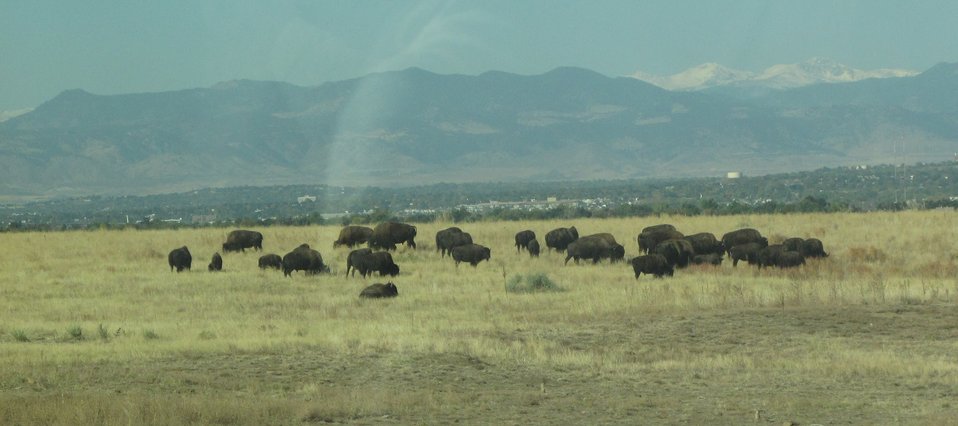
Bison herd at the Rocky Mountain Arsenal in Colorado.